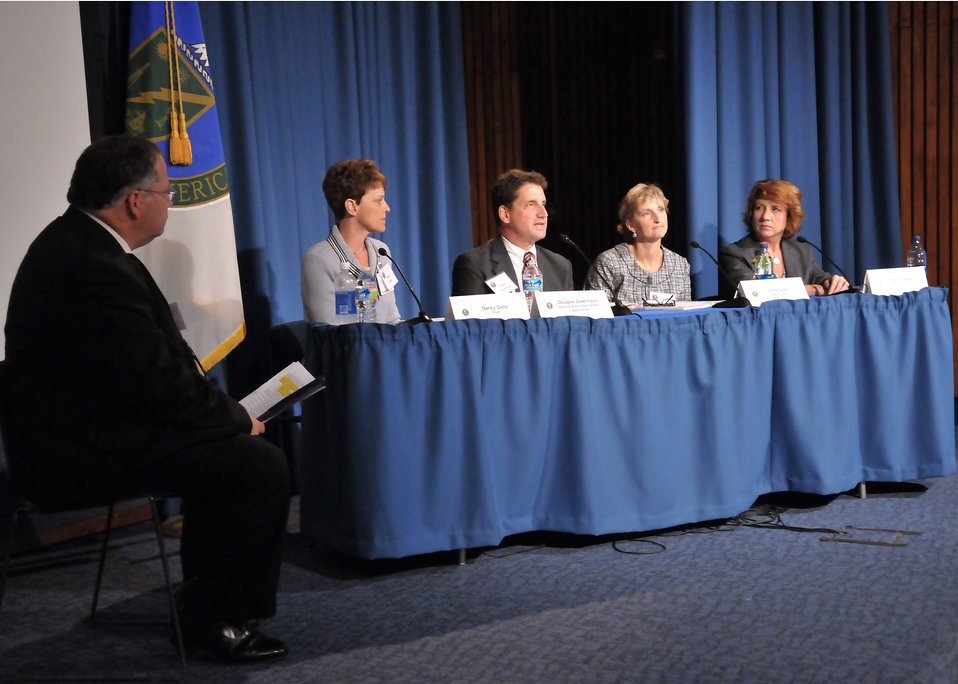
Industry Panel at the EV Cities Workshop